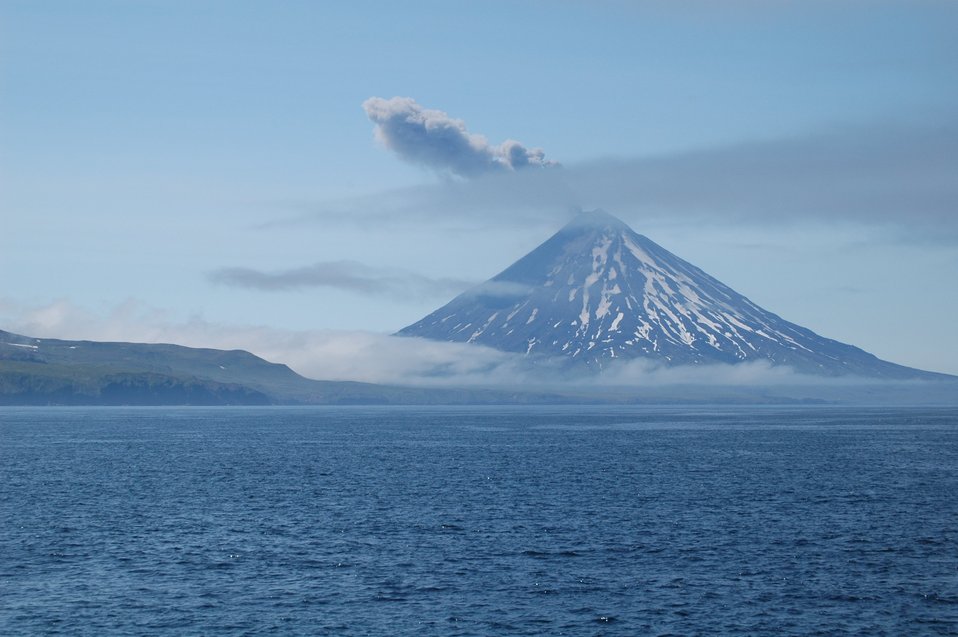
Mount Cleveland erupting ash